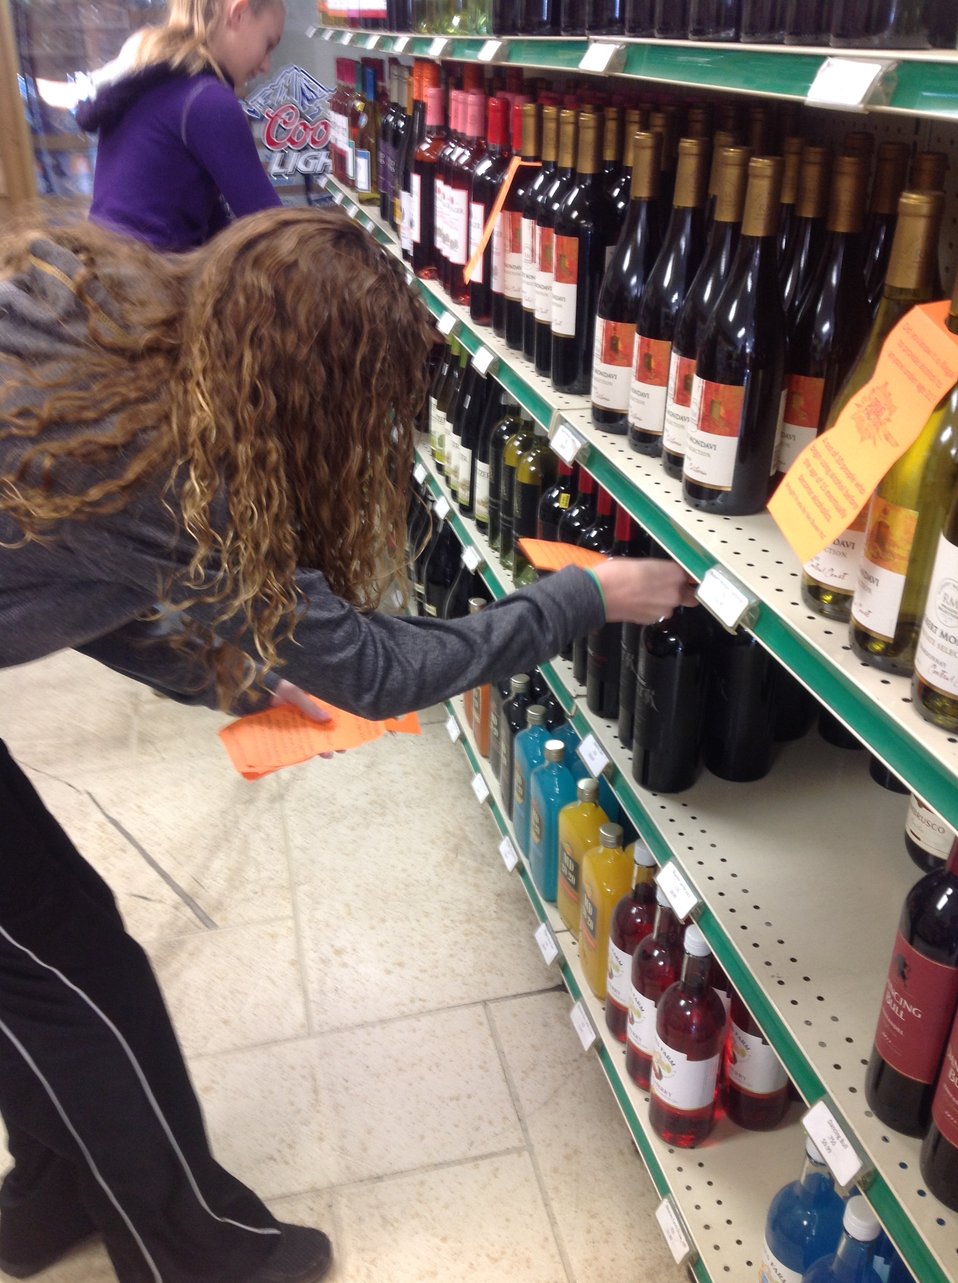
Getting the Word Out

Teenagers from the Van Buren County SAFE Coalition's, Youth Leadership Council (YLC) in Keosauqua, Iowa participate in various events during National Drug Facts Week, 2014.